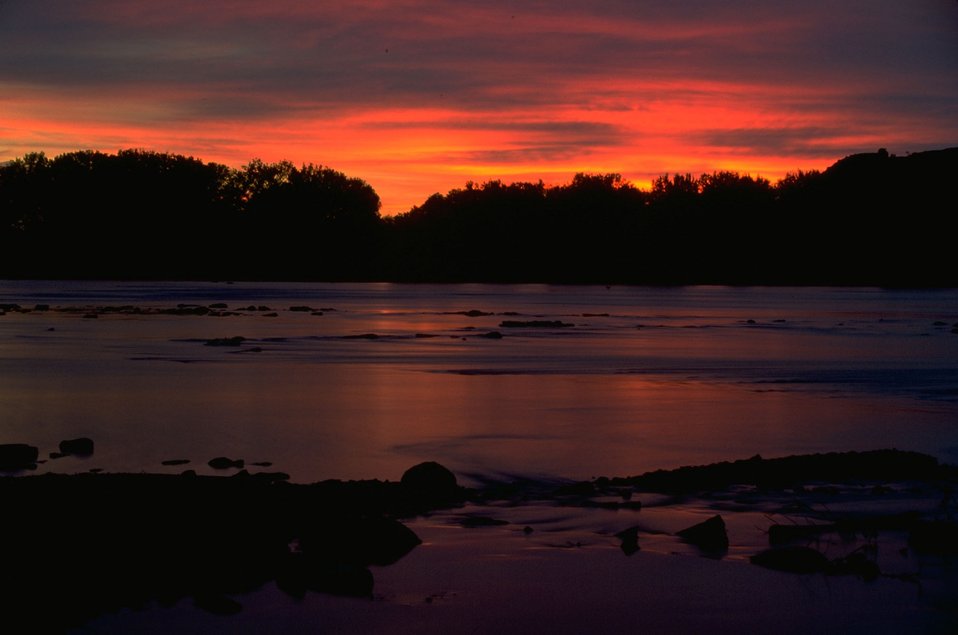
Trees silhouetted against the sunset